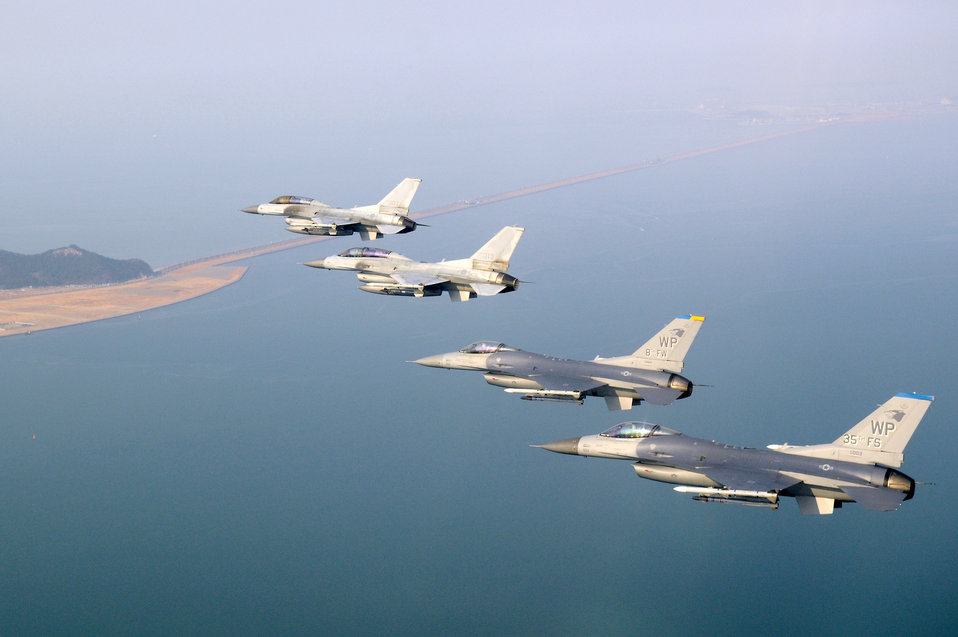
Korean War anniversary

A U.S. and South Korean air force coalition flight of F-16 Fighting Falcons fly over the Saemangeum Seawall in South Korea, Nov. 10, 2010, during a joint celebration of the 60th anniversary of the Korean War.